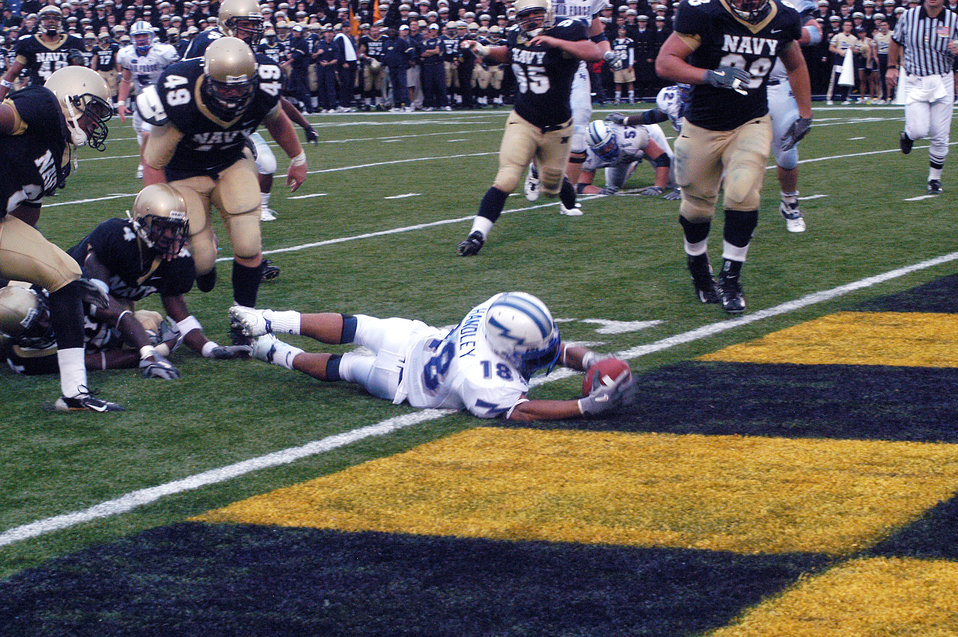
Midshipmen cage Falcons, 27-24

ANNAPOLIS, Md. -- Falcon halfback Justin Handley stretches into the end zone to score from 7 yards out during the third quarter of play against Navy. Navy defeated Air Force 27-24.